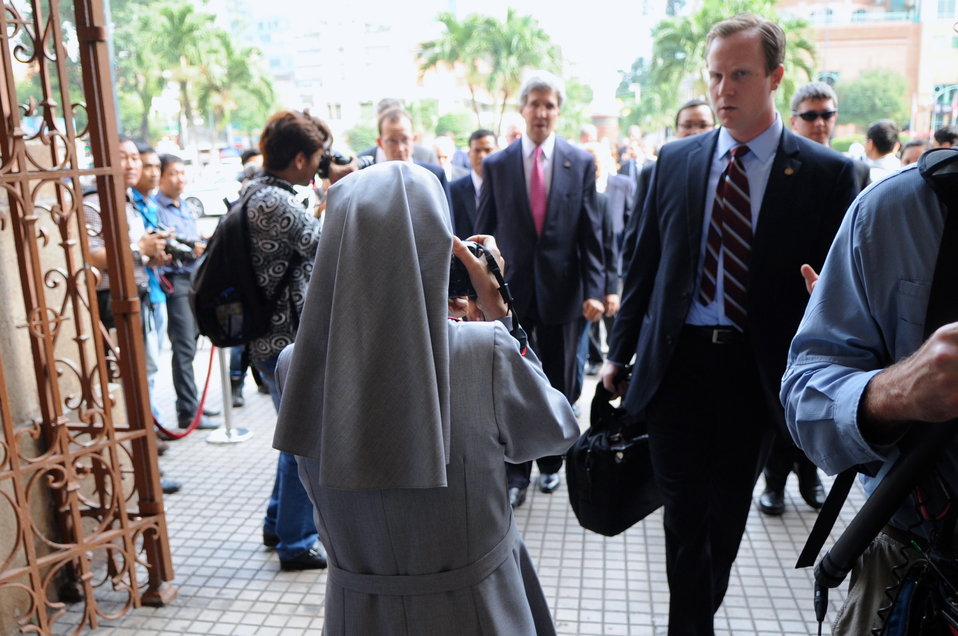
Secretary Kerry Arrives at Notre Dame Cathedral in Vietnam for Mass

A nun takes a photograph of U.S. Secretary of State John Kerry as he arrives at Notre Dame Cathedral in Ho Chi Minh City, Vietnam, for Mass on December 14, 2013.